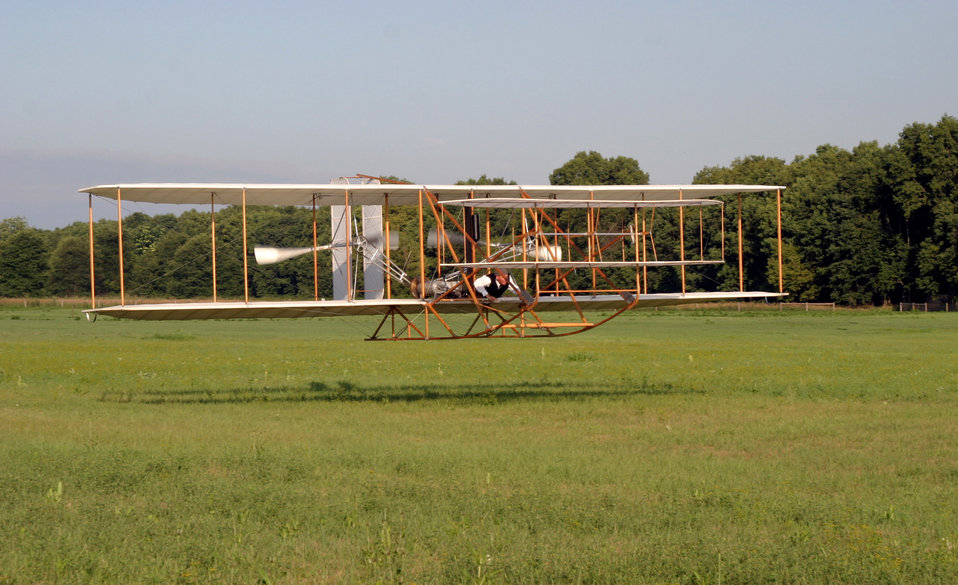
Wright Flyer III flies again over Huffman Prairie

Vintage aircraft builder Mark Dusenberry pilots a replica Wright Flyer III Oct. 5 at Huffman Prairie Flying Field. He flew for about 40 seconds before a wingtip struck the ground while turning. Mr. Dusenberry was not hurt but his aircraft suffered damage to the undercarriage and both propellers. The incident took place during a reenactment of the first practical circling flight by a powered aircraft during a National Park Service and Aviation Heritage Foundation-sponsored event at Wright-Patterson Air Force Base, Ohio.